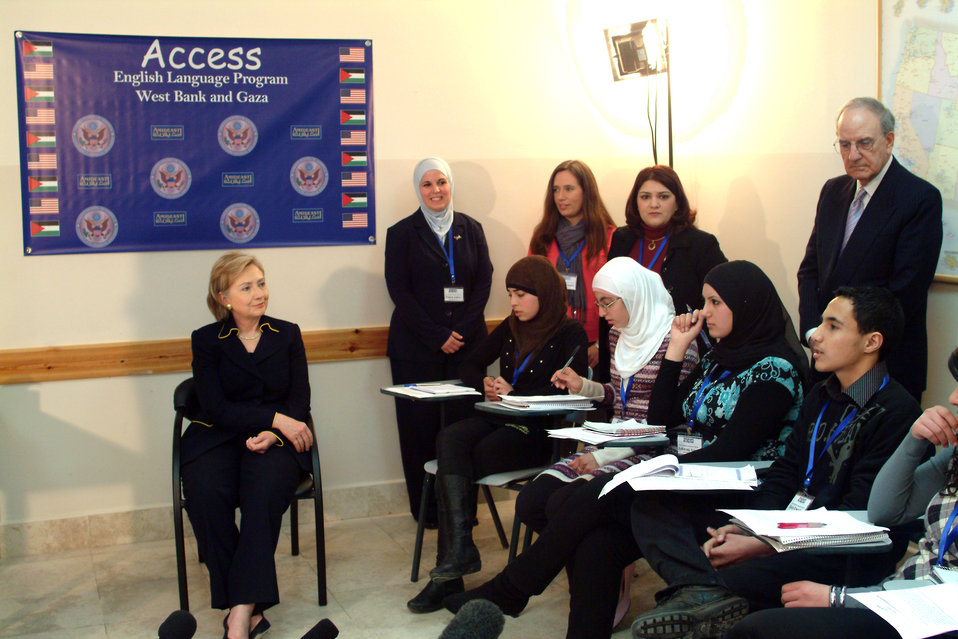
Secretary Clinton Attends Amideast Event

U.S. Secretary of State Hillary Rodham Clinton attends an Amideast event in Ramallah March 4, 2009.